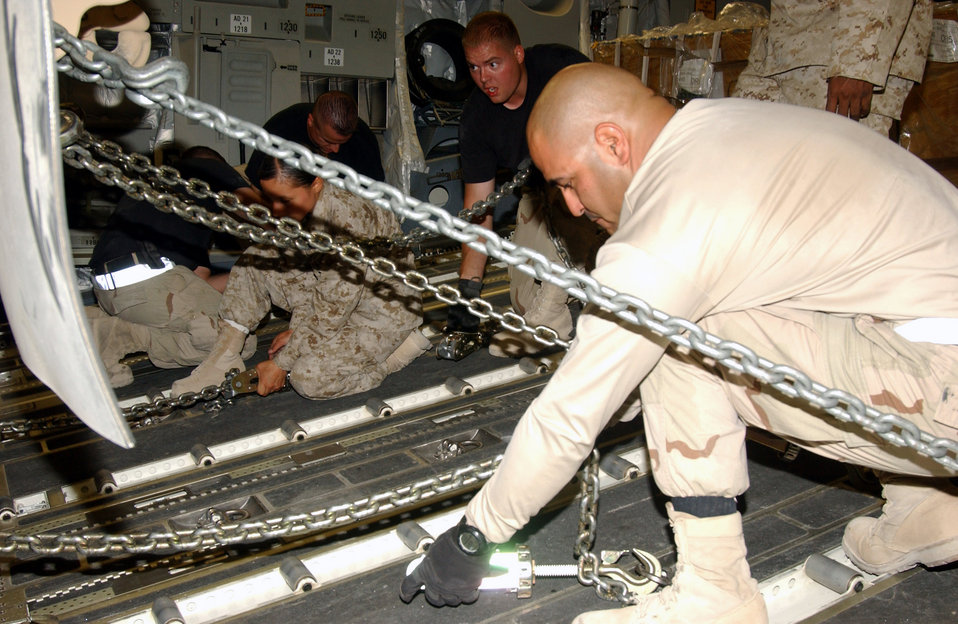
Deployed Airmen load, help deliver new 'Buffaloes'

Staff Sgt. Edgar Perez and other aerial porters team up with Marines to strap a Mine Resistance Ambush Protected vehicle into a C-17 Globemaster III Aug. 25 at Al Asad Air Base, Iraq. The new MRAP Category III Buffalo models, which cost between $600,000 and $1 million each, will phase out the High Mobility Multipurpose Wheeled Vehicles, also known as Humvees. MRAPs have bottoms raised more than 3 feet off the ground to increase servicemembers' mobility and enhance mission success throughout the areas of responsibility. Sergeant Perez is an aerial transportation specialist with 438th Aerial Port Flight deployed from Pope Air Force Base, N.C.